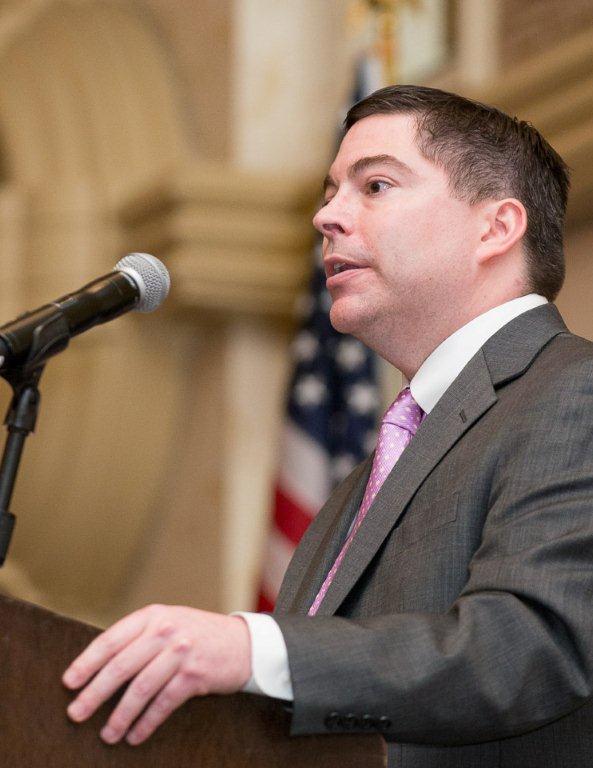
4.1.2014 FCBA Luncheon

Federal Communications Bar Association Luncheon, 4/1/14
Photo by Mark Van Bergh, courtesy of FCBA